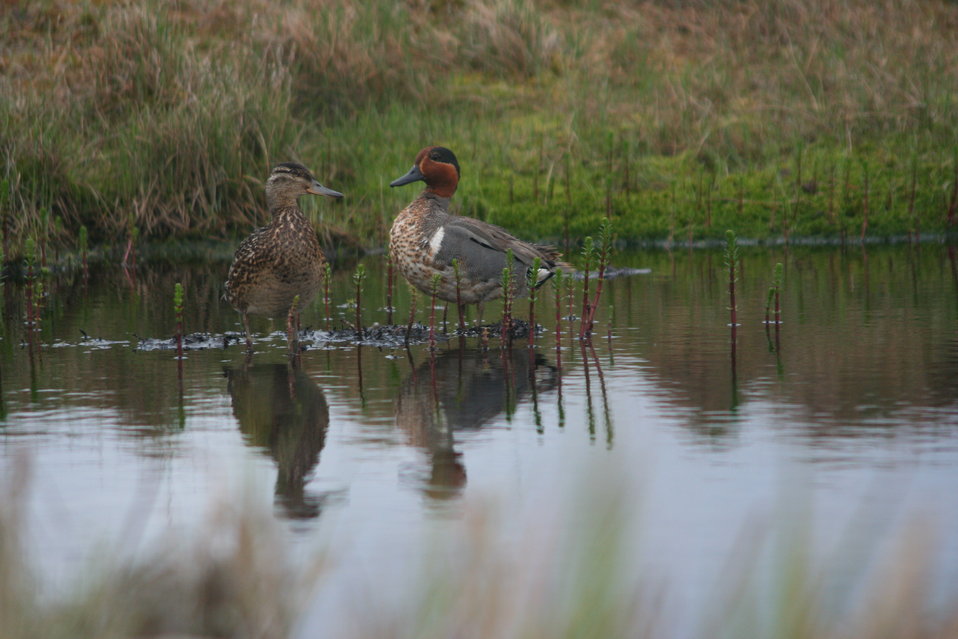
Green-winged Teal pair

USFWS Yukon Delta NWR